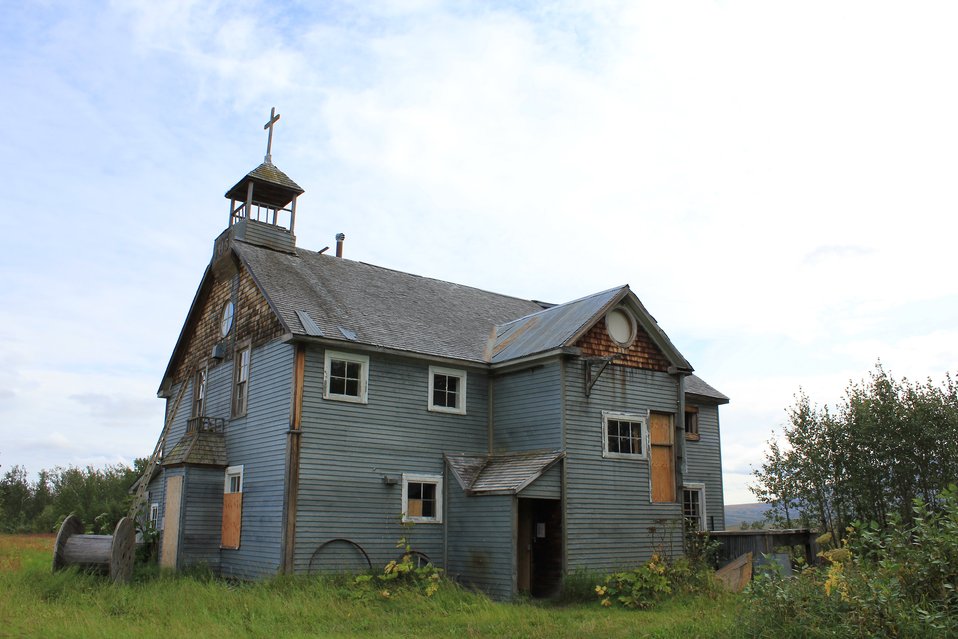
Former Catholic Mission at Pilgrim Hot Springs on the Pilgrim River, Imuruk Basin